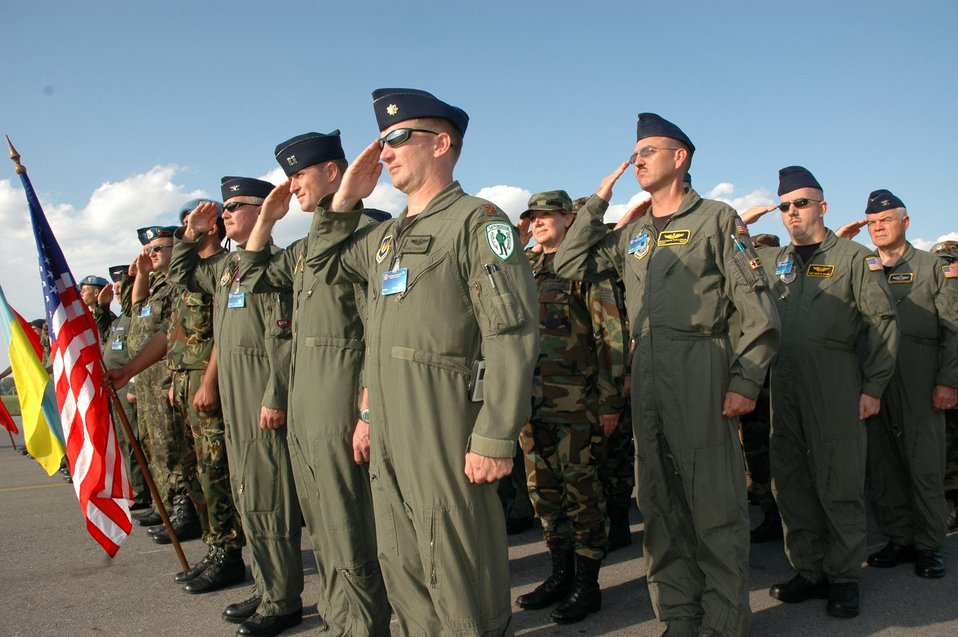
Cooperative Key 05 kicks off

PLOVDIV, Bulgaria -- Airmen with the 401st Expeditionary Group stand at attention during opening ceremonies at exercise Cooperative Key 05 here. The exercise is a multinational exercise designed to enhance the interoperability of NATO and partner nation air forces through cooperation and familiarization of the organization's procedures.